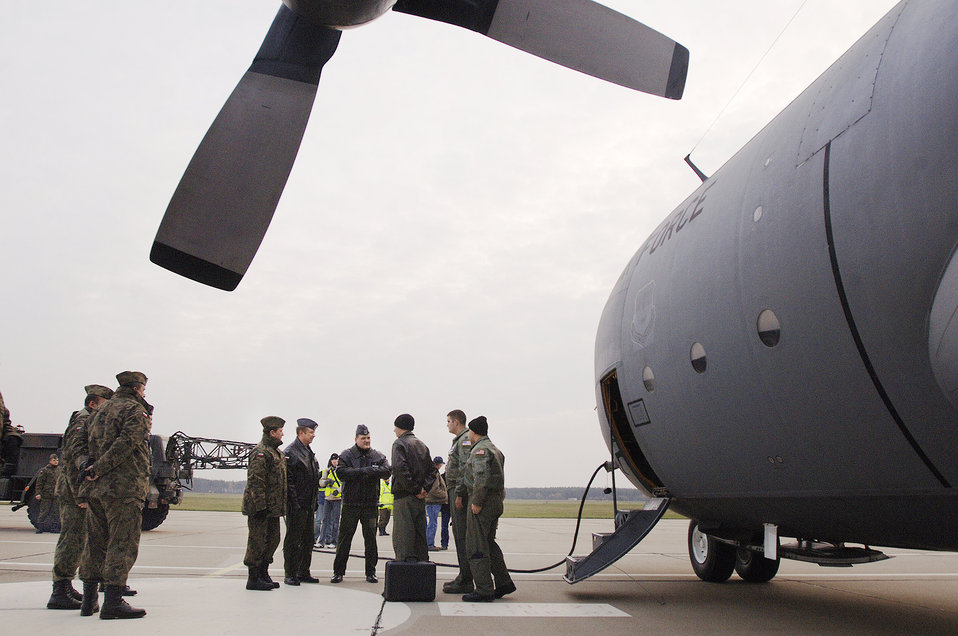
C-130 arrival in Poland marks end, new beginning

Capt. Tyler Robertson, Capt Ryan Donohoe and Staff Sgt. Eric Kleser are greeted by Polish air force's 33rd Air Base Commander Brig. General Tadeusz Mikutel (fourth from right) and 14th Air Transport Squadron Commander Lt. Col. Mieczyslaw Gaudyn Nov. 2, 2009, at Powidz Air Base, Poland. The aircraft and crew, from Ramstein Air Base, Germany, delivered the C-130 to Poland as part of a program for building partnership capacities between the United States and Poland. Captain Robertson is an aircraft commander, Captain Donohoe is a navigator, and Sergeant Kleser is a flight engineer.